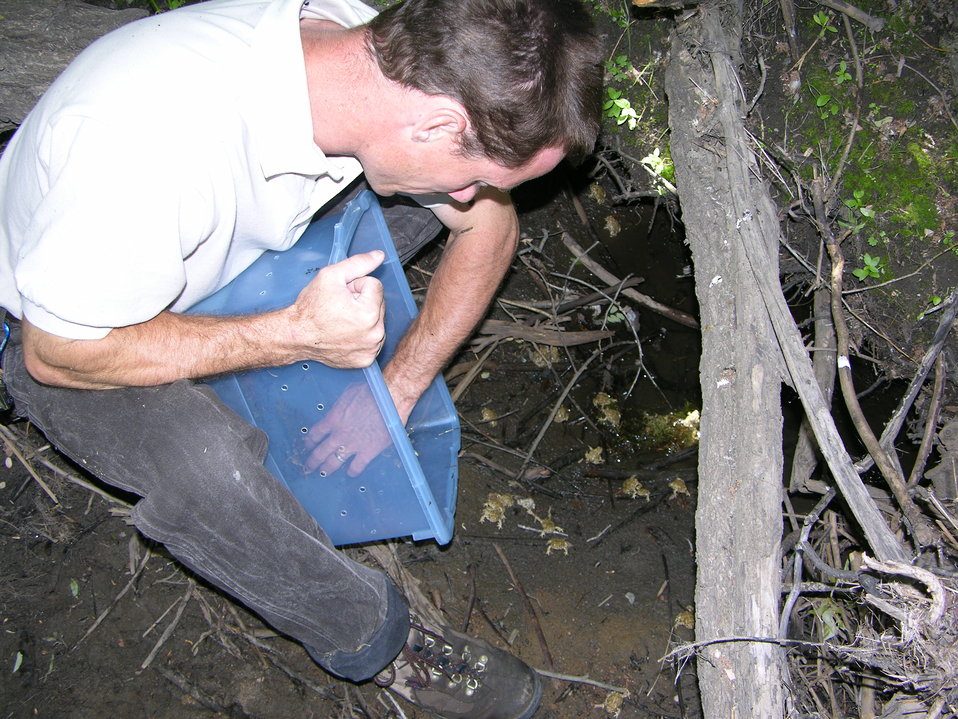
Wyoming Toads Released into Wild

Once the toads are of age they are released back into the wild, this is currently done at only two locations in Wyoming.